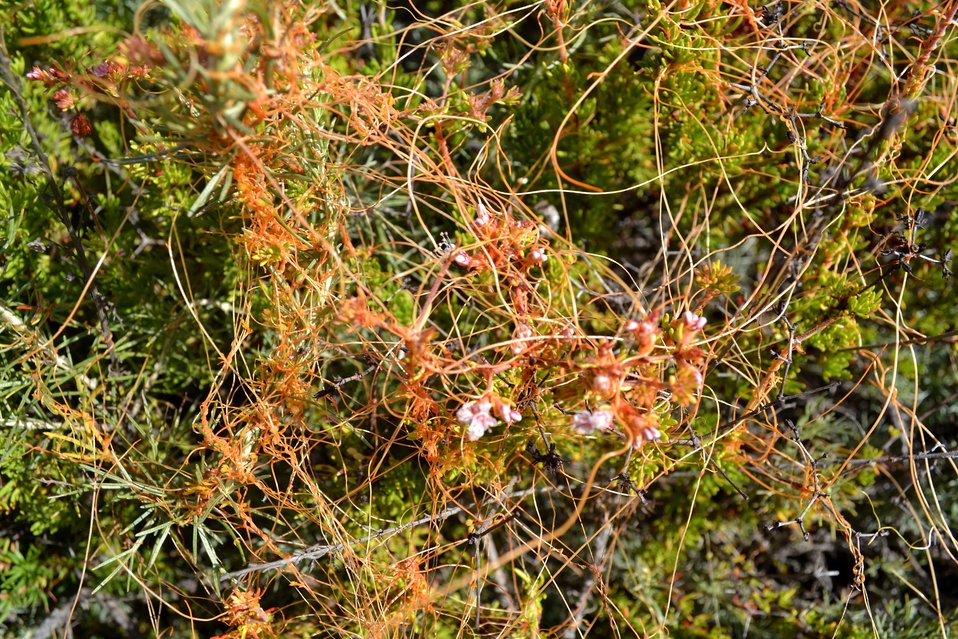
Parasitic dodder in bloom (Cuscuta pacifica)

This subspecies of dodder is found on only salt marsh plants. Dodder is an unmistakable mesh of bright, thread-like orange branching, with no ground contact. It gets its water from attaching its roots to other plants. The tiny light pink blooms are its flowers. Interesting fact: this plant lacks chlorophyll!